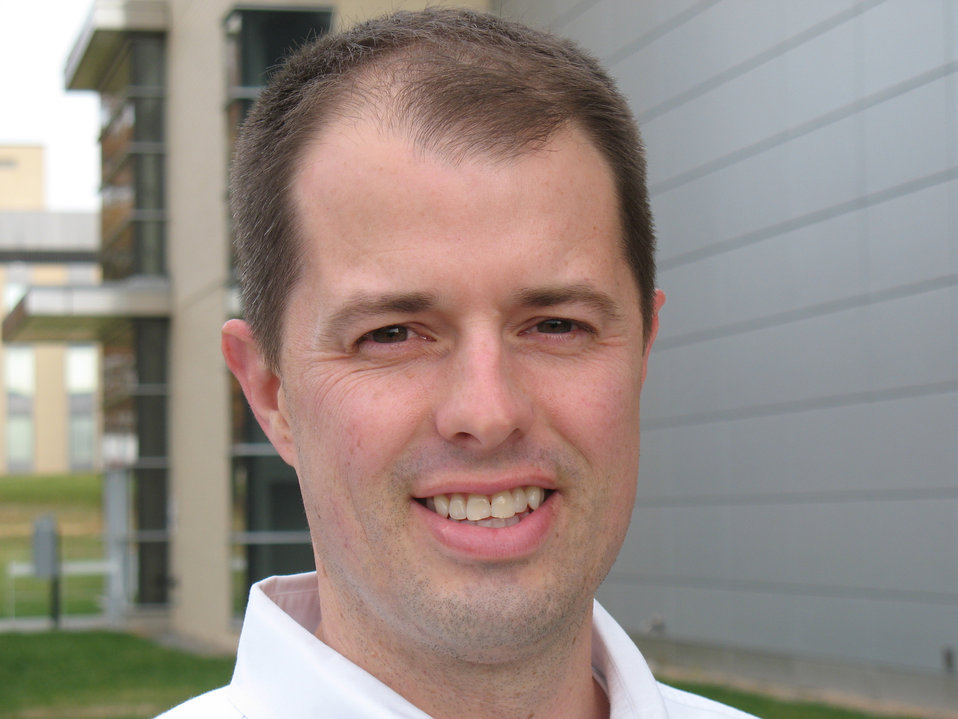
Pecase Award Winner

R. David Holbrook